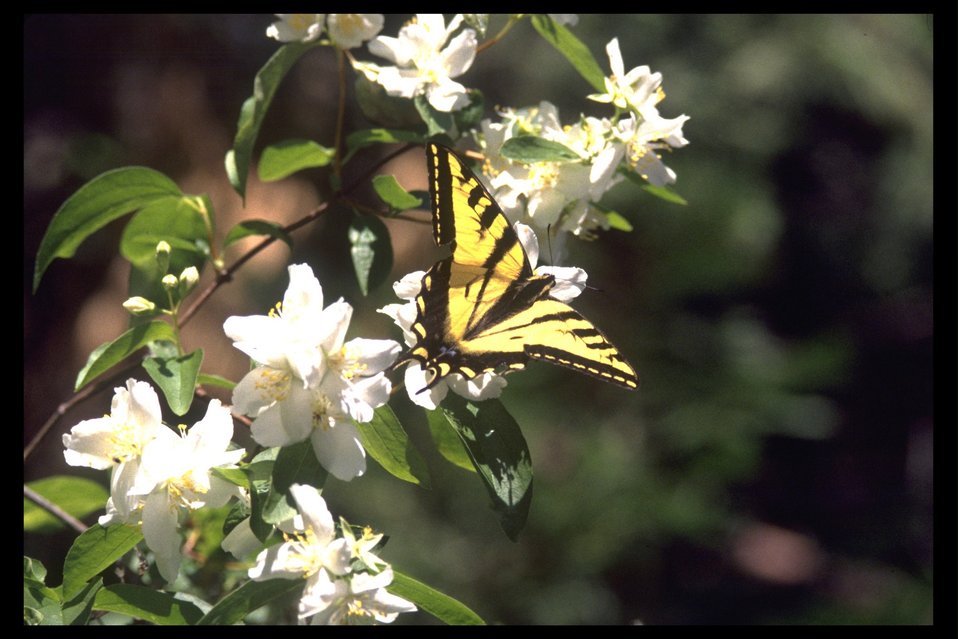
Wild Mock Orange (Philadelphus lewisii) at Fredenberg Butte.